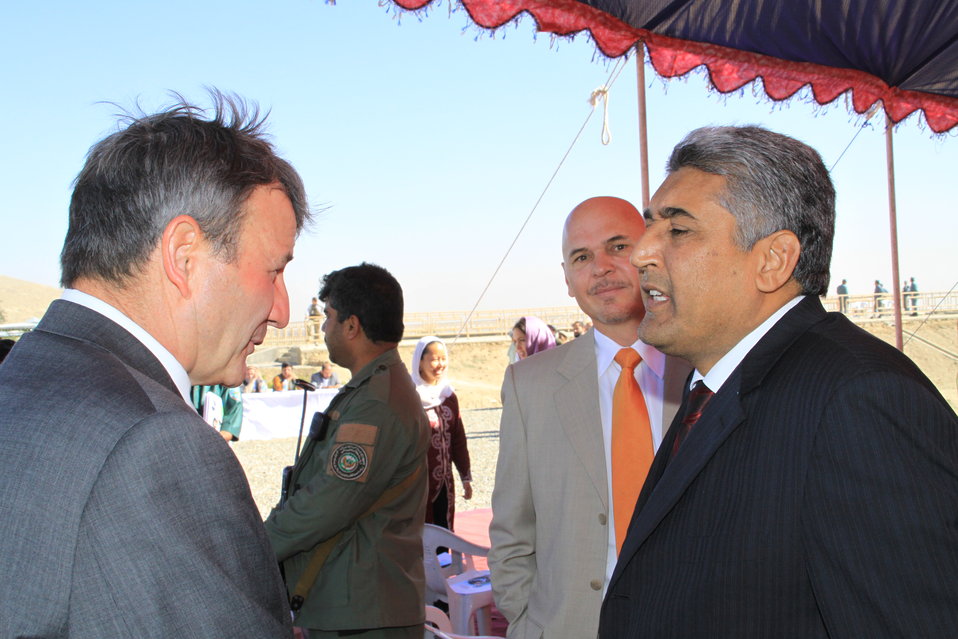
AVIPA Plus Wheat Seed Distribution 101005

US Ambassador Karl Eikenberry and USAID Acting Mission Director Kevin Brownawell joined the Minister of Agriculture, Irrigation and Livestock, H.E. Minister Mohammed Rahimi in signing a Memorandum of Understanding and distributing vouchers to area farmers for wheat and fertilizer.